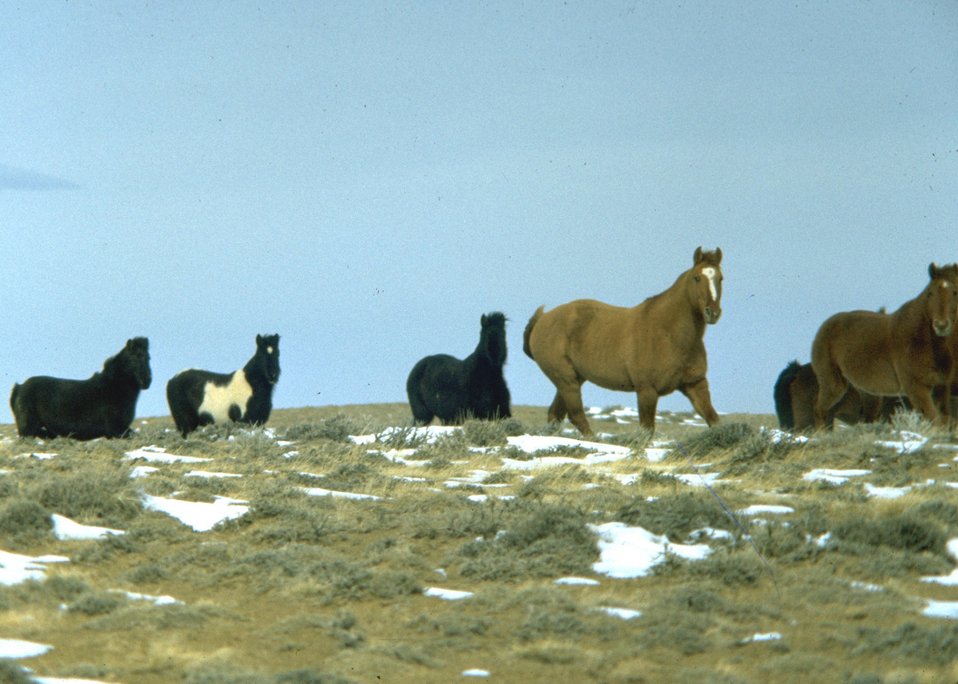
Wild Horses in Wyoming.